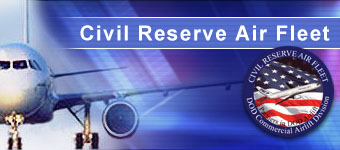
Civil Reserve Air Fleet